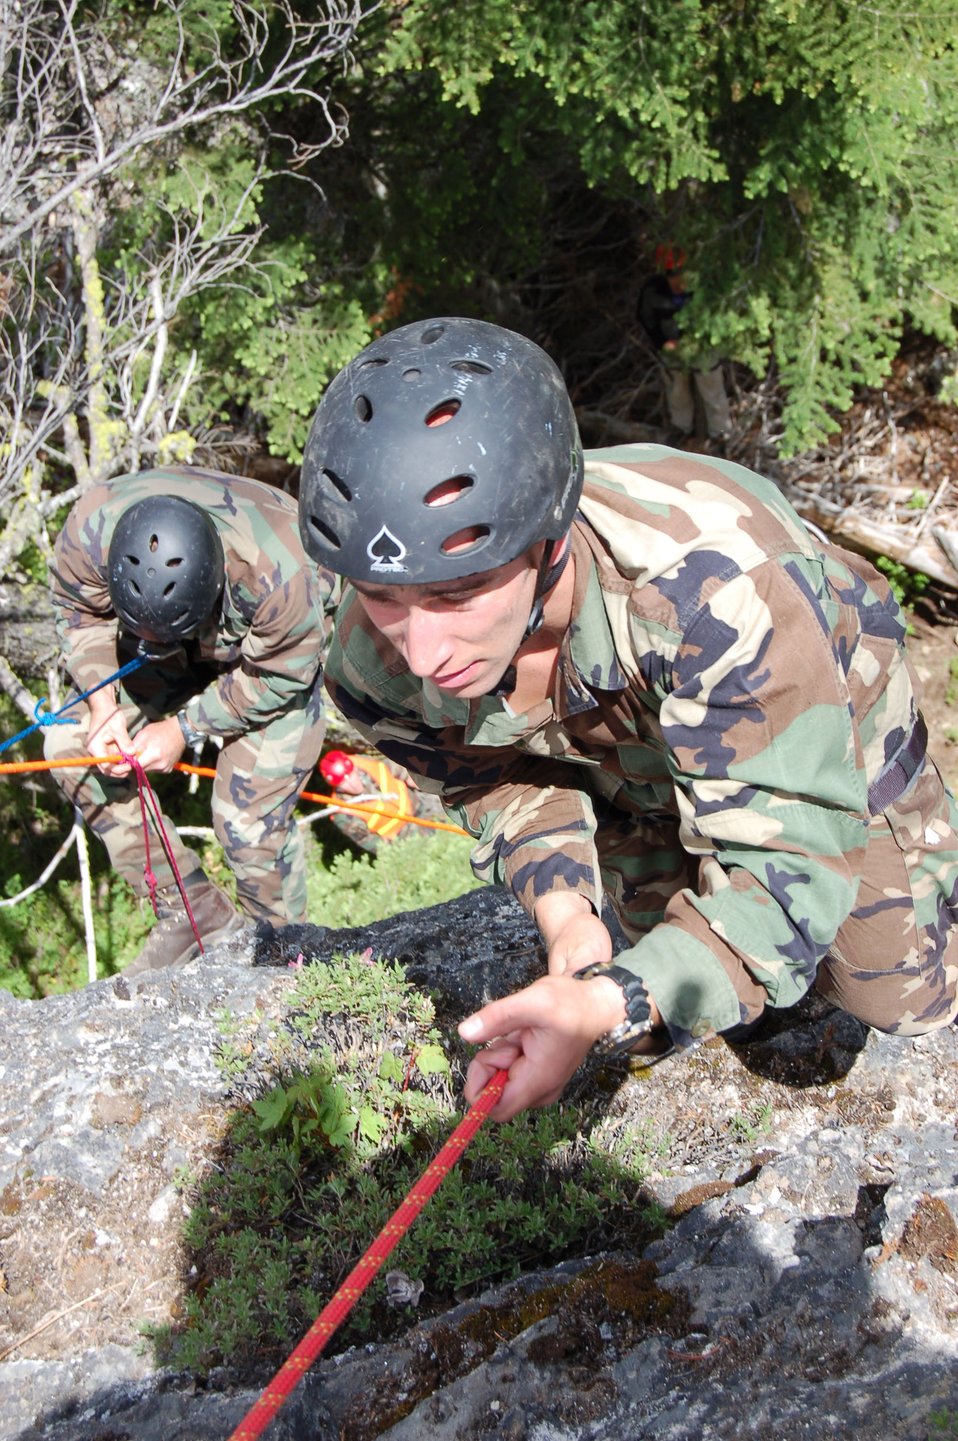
Air Force 'Guardian Angels' put to test at survival competition

Staff Sgt. Michael Garcia (foreground), and Staff Sgt. Matthew Zimmer, competitors in the 2007 SERE (survival, evasion, resistance and escape) Challenge, climb a 70-foot rock face June 11 in Colville National Forest near Fairchild Air Force Base, Wash. Sergeants Garcia and Zimmer, SERE specialists assigned as water survival instructors at Fairchild AFB were the top team among 15 who competed.